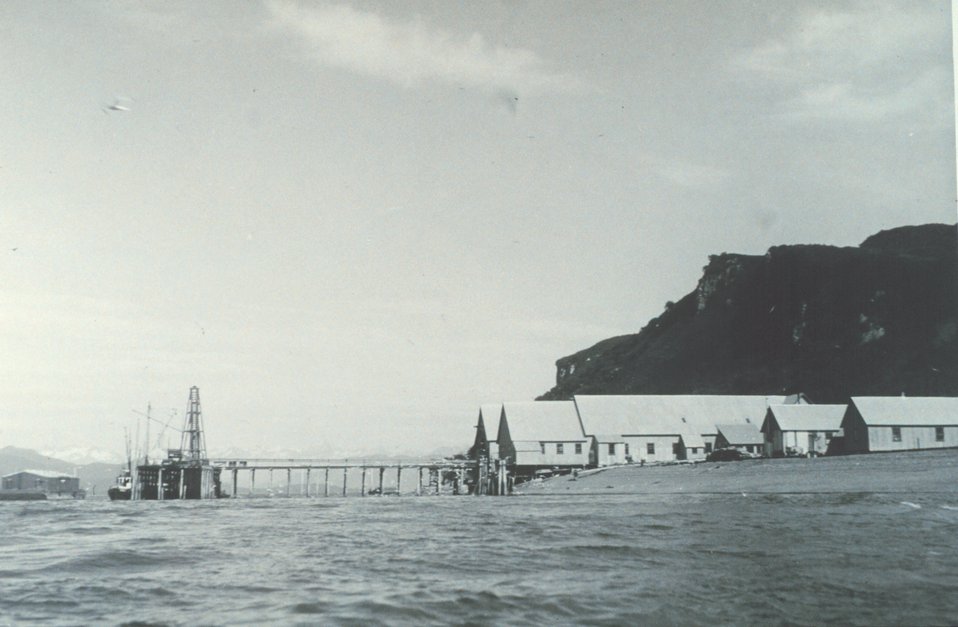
The cannery on Chisik Island. F&WS B-60180.